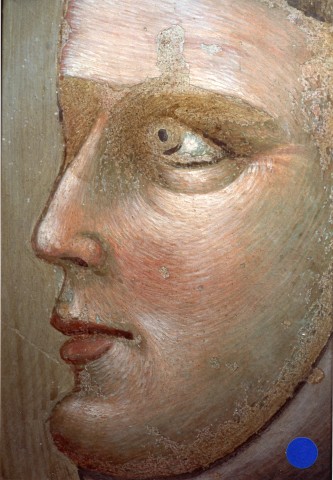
'giotto', Apparizione di san Francesco d'Assisi al capitolo di Arles 06